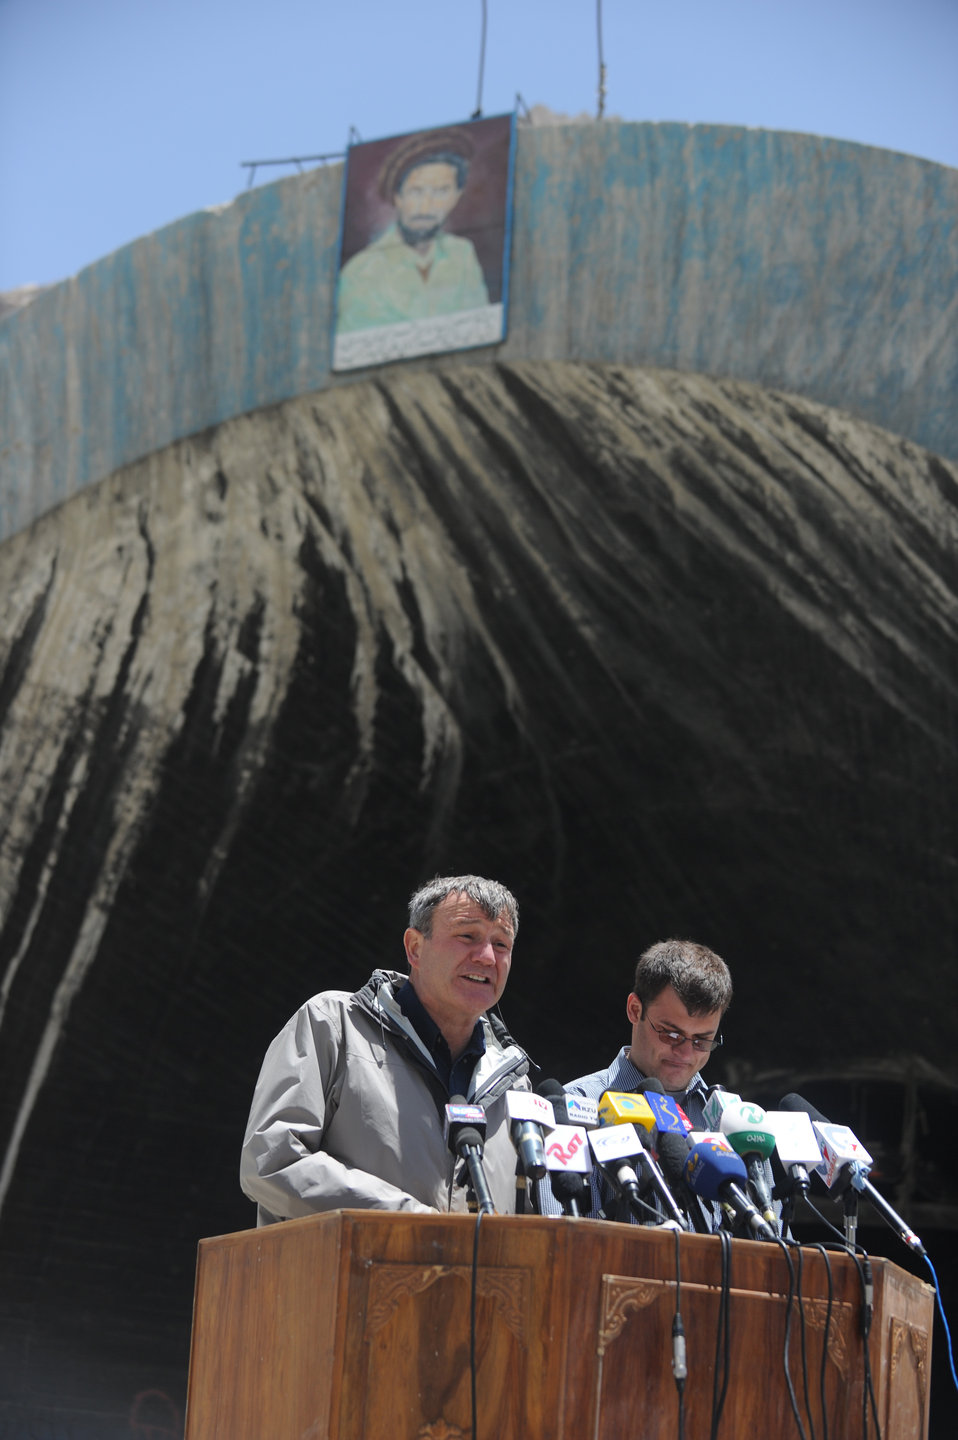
U.S. Ambassador Karl W. Eikenberry makes remarks during a ceremony to mark the beginning of renovations at the Salang Tunnel on the border of Parwan and Baghlan Provinces, Afghanistan, on Wednesday, June 15, 2011. (S.K.Vemmer/Department of State)